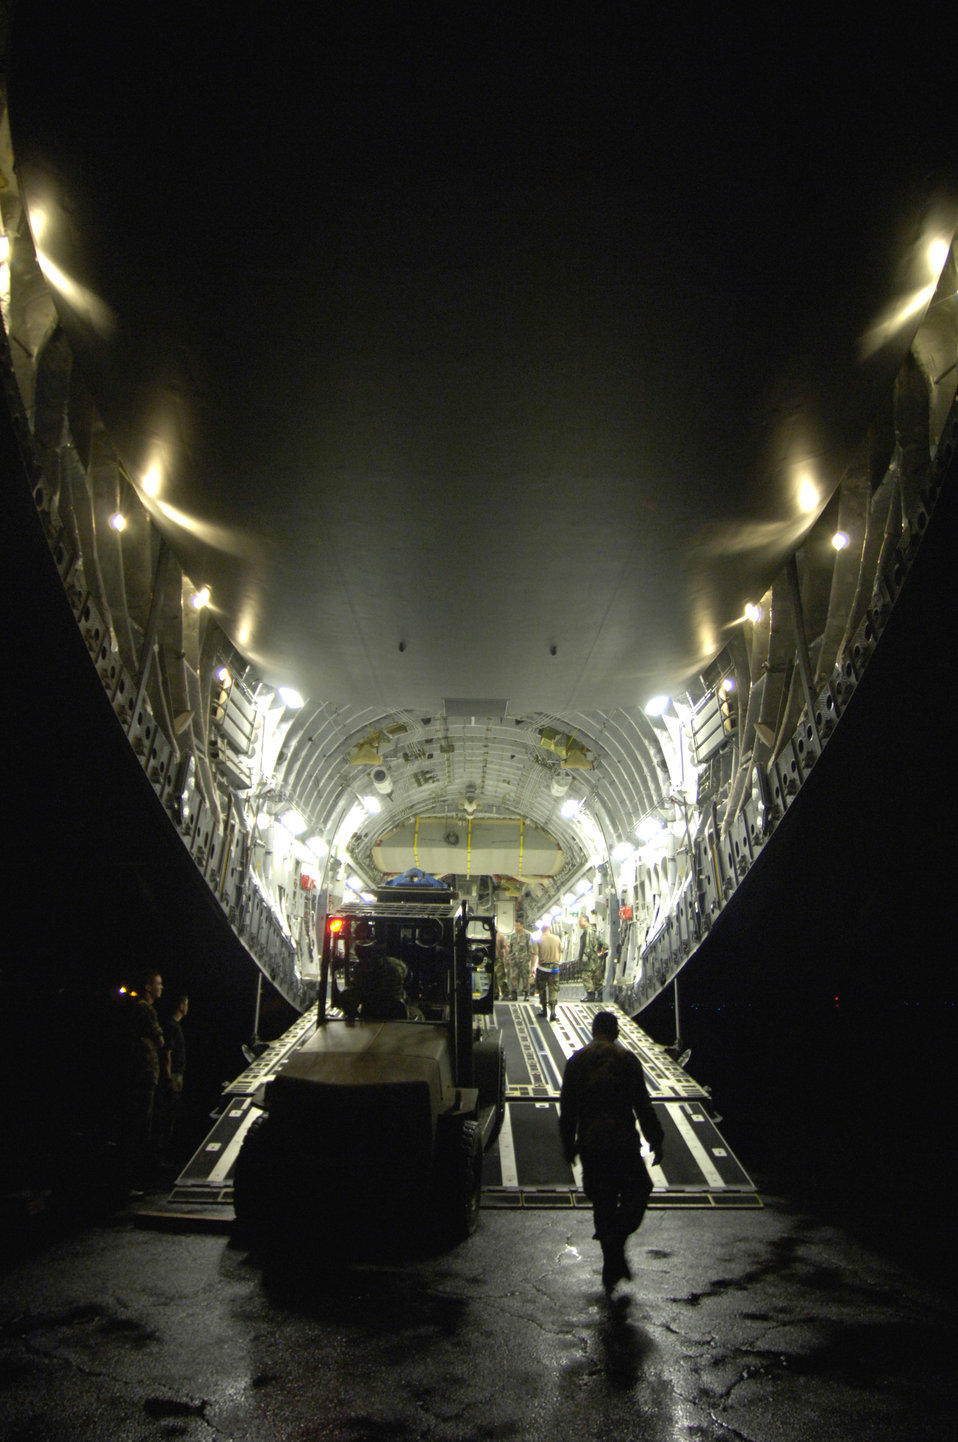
C-17s deliver relief to Kauai

An Airman from the 291st Combat Communications Squadron uses a forklift to load a water pump onto a C-17 Globemaster III at Hilo International Airport, Hawaii, Thursday, March 16, 2006. The C-17 delivered recovery equipment to the island of Kauai, Hawaii, after a dam burst, isolating thousands of people along the island's north shore.